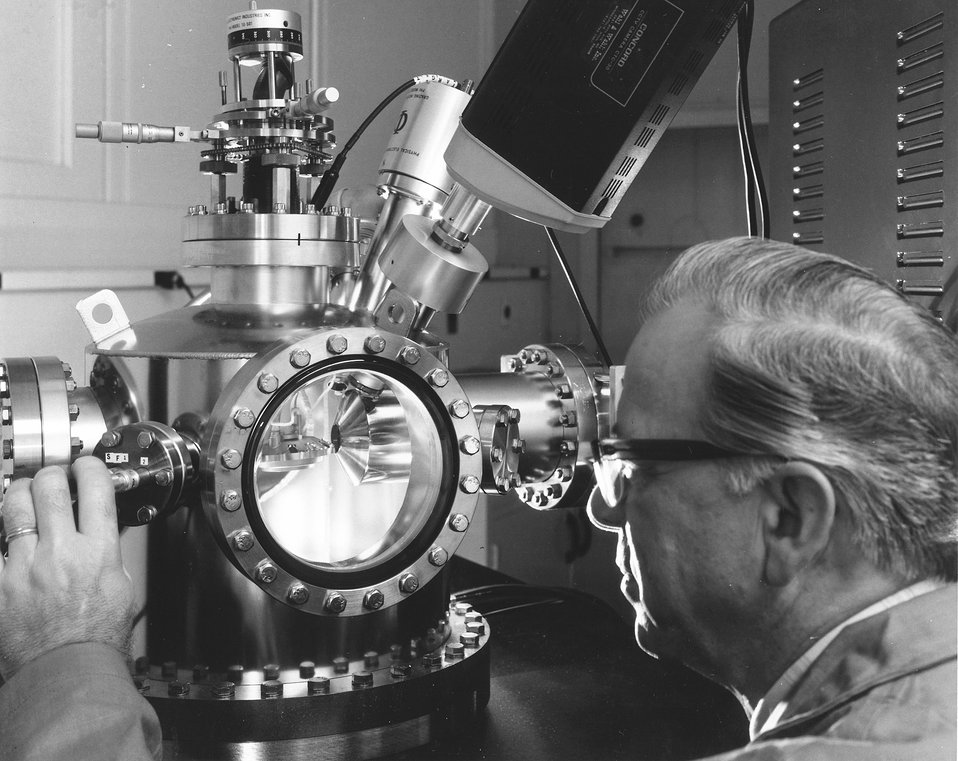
A Hanford scientist uses an Auger electron spectrometer to determine the elemental composition of surfaces. c. 1974